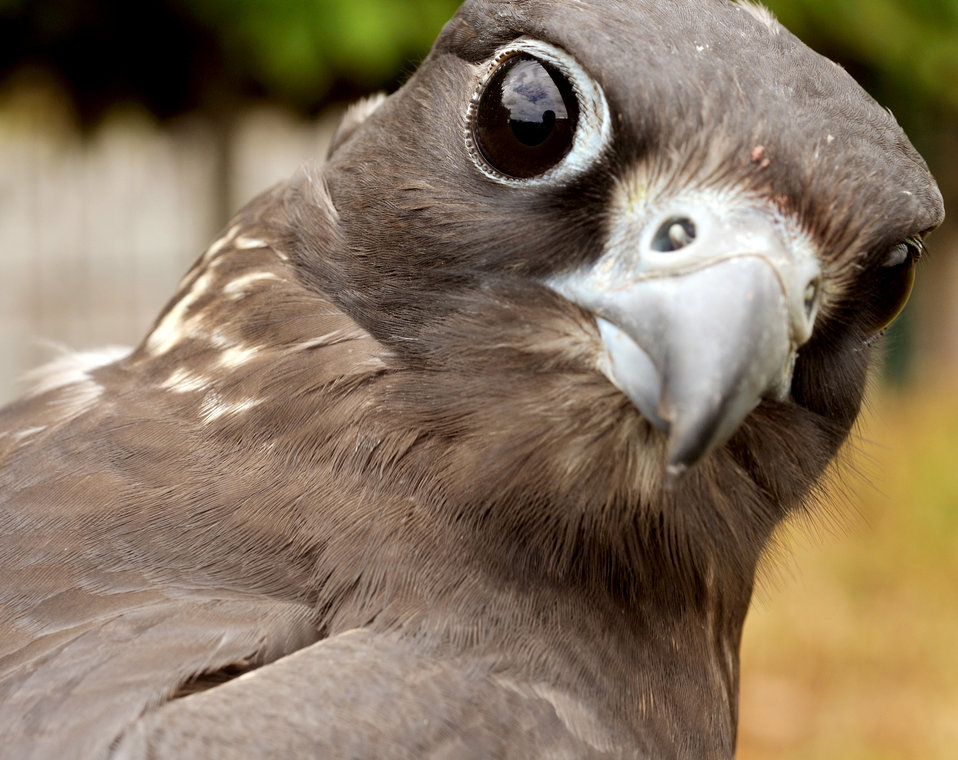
Falconer

Tony, a 3-month-old Saker falcon, sits on top of his perch July 29, 2010 at Spangdahlem Air Base, Germany. The falcon is handled by the Ronald Leu and is used as part of a program to deter wildlife from going near the base's flightline, and causing potential aircraft damage. Mr. Leu is the base falconer with the 52nd Civil Engineer Squadron.